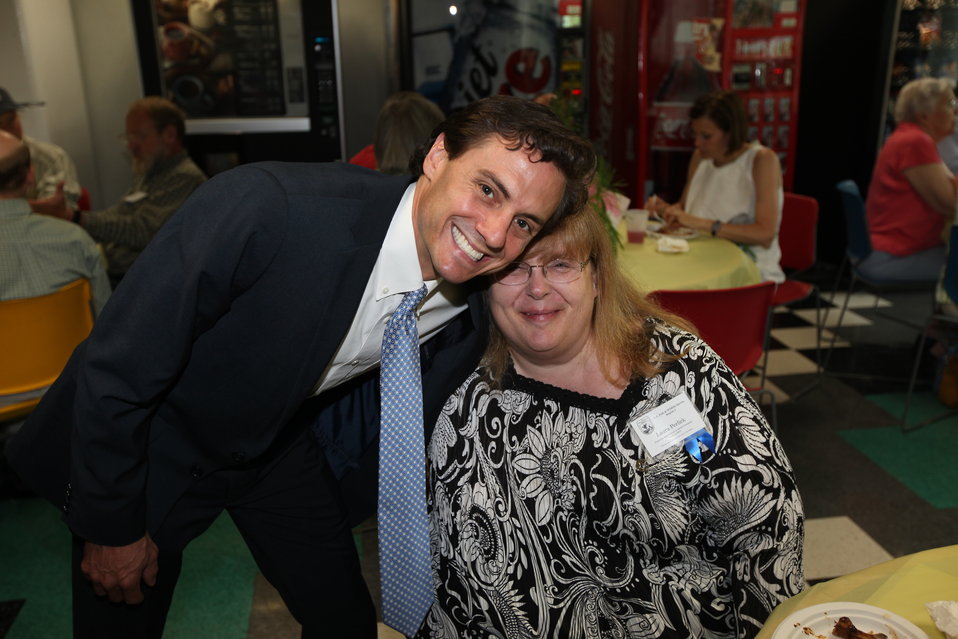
Northeast Region Employee Appreciation Awards

Luncheon - Paul Phifer and Laura Perlick.